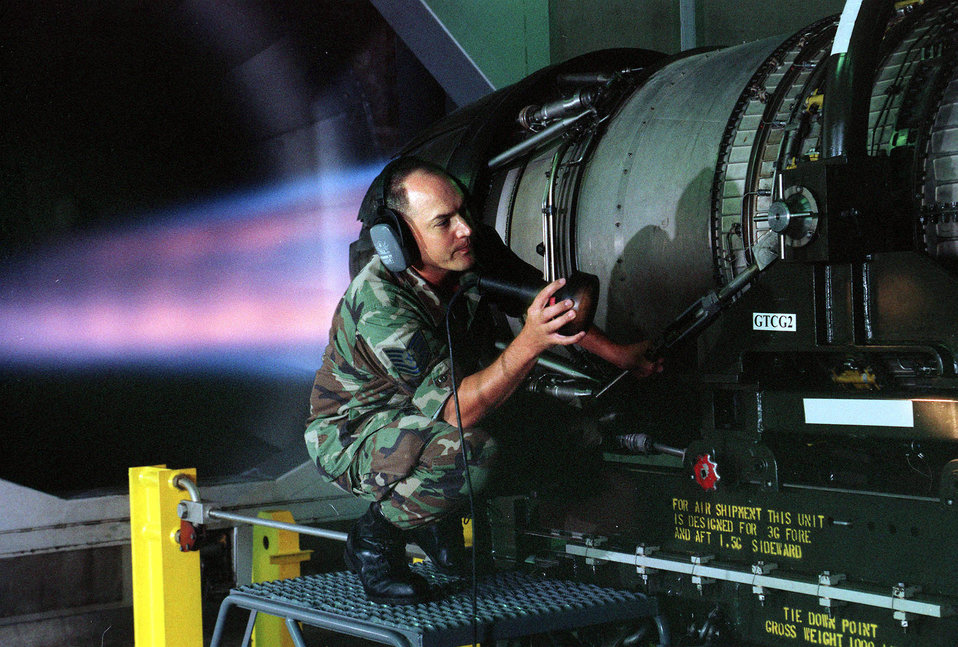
Full afterburner

FILE PHOTO -- Tech. Sgt. Robert Huffnagel from the 35th Maintenance Squadron, Misawa Air Base, Japan, closely monitors an F-16 Fighting Falcon engine on afterburners during operations at a test cell. Huffnagel is looking for oil and fuel leaks to ensure that the engine is serviceable.